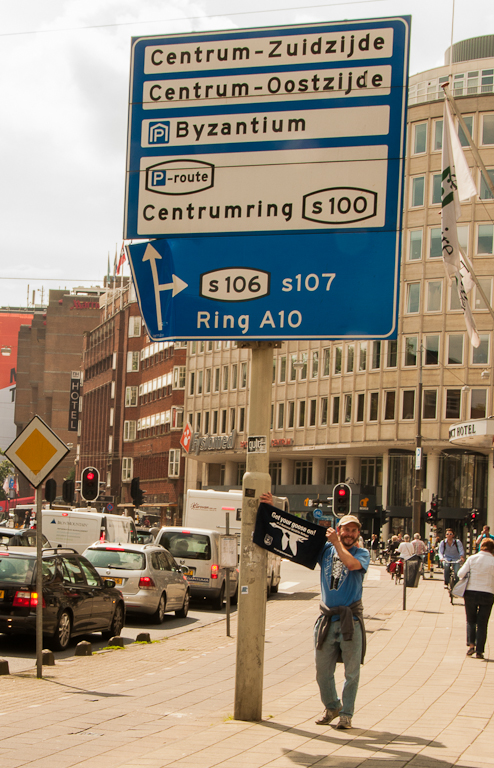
GYGO! Goes International!

A USFWS employee took some fun GYGO! photos while on vacation with family in Europe. Here's one from Amsterdam!